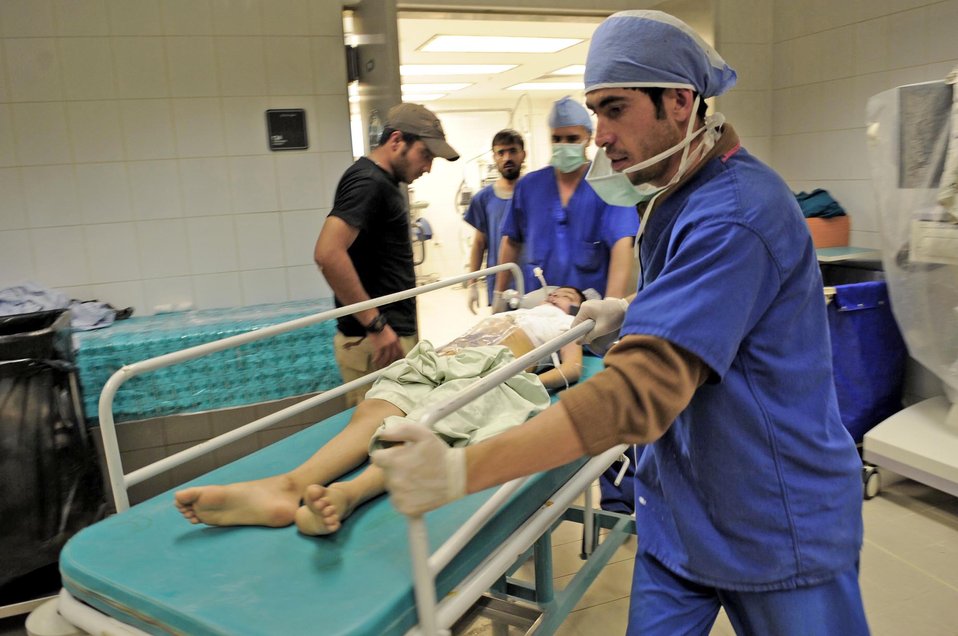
American, Afghan docts begin surgical process for young burn victim

Abdul Rahman, 13, is taken out of the operating room after having surgery on his neck and chest March 1, 2010, at the Kandahar Regional Military Hospital in Afghanistan.